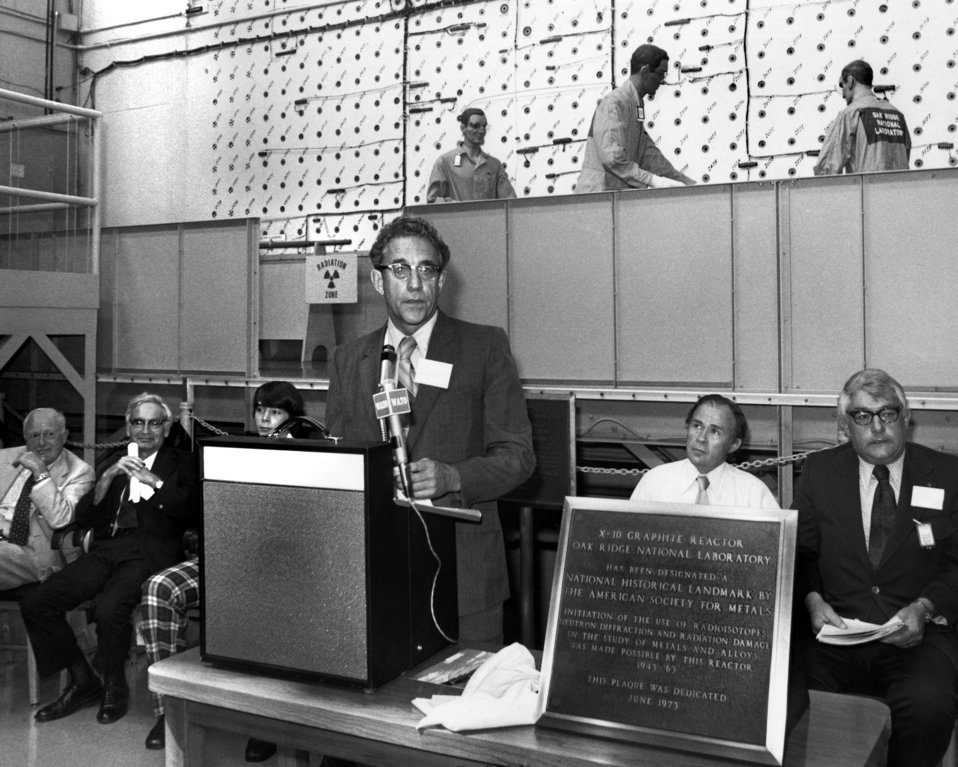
X-10 Graphite Reactor Dedication 1973 Oak Ridge

73-527-12 DOE photo Frank Hoffman June 1973 Oak Ridge Tennessee